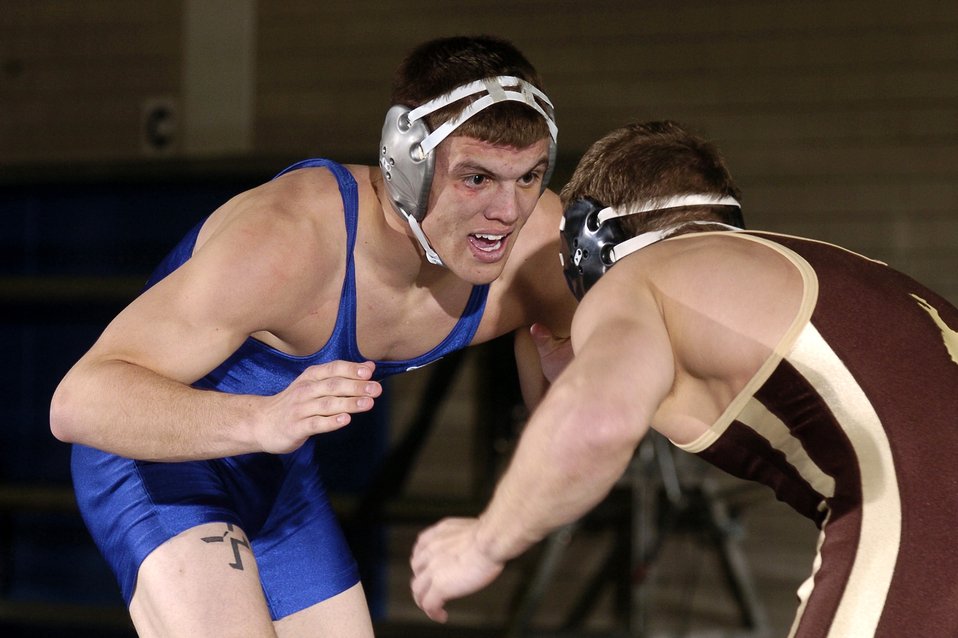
Cadet named to wrestling coaches' All-Academic Team

Air Force Academy senior Beau Tresemer is one of 68 wrestlers named to the National Wrestling Coaches Association's 2005-06 All-Academic Team.